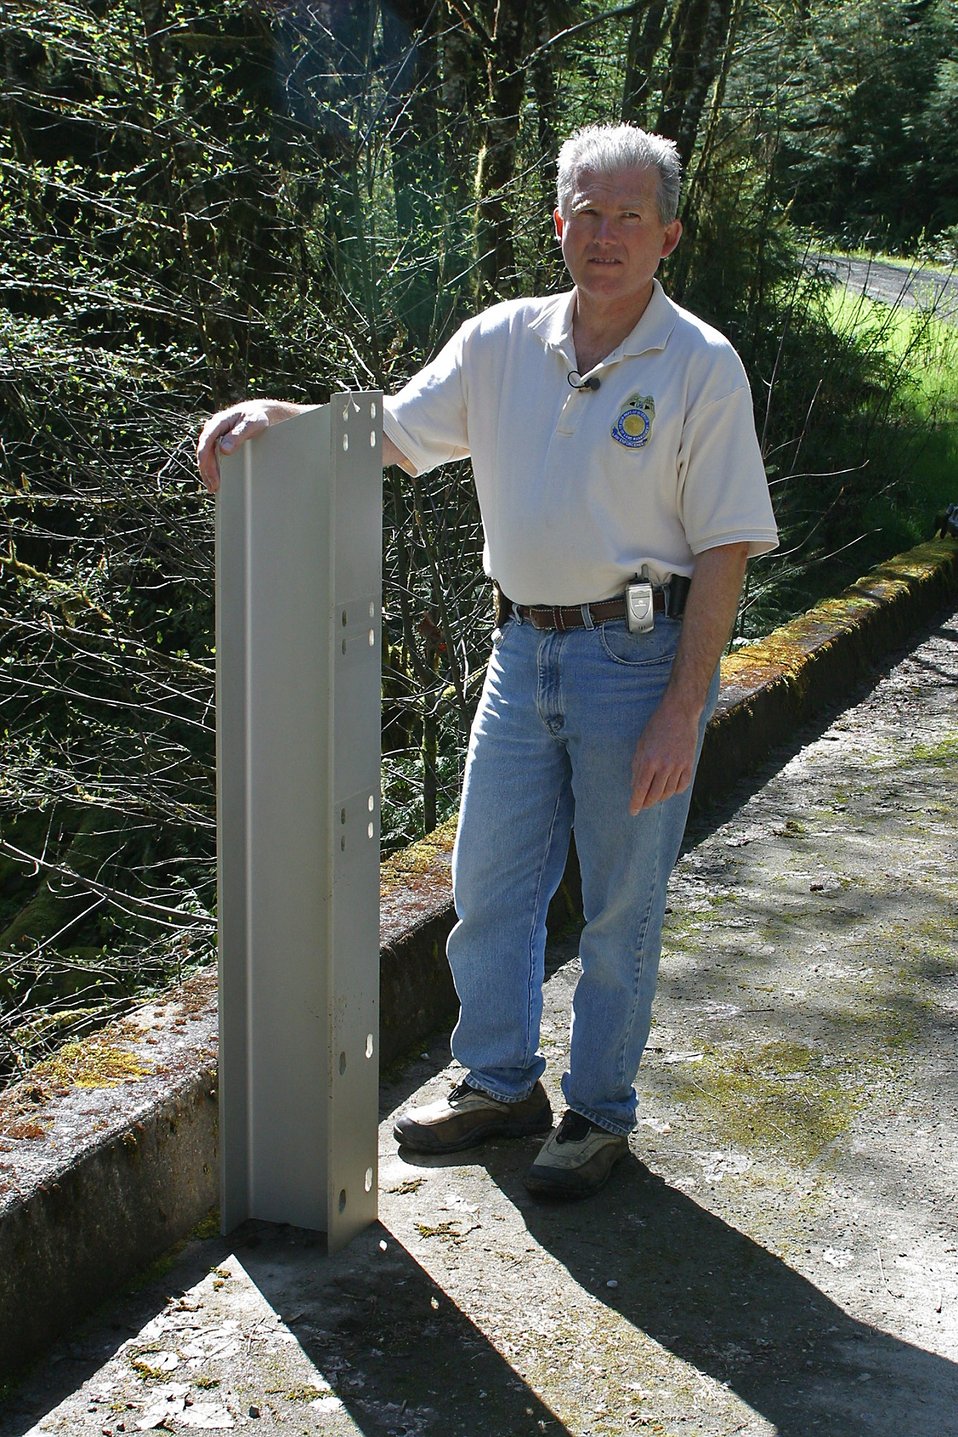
Craig Magill, BLM Special Agent in Charge displays one of the aluminum guardrail uprights taken from the Lyons Bridge.